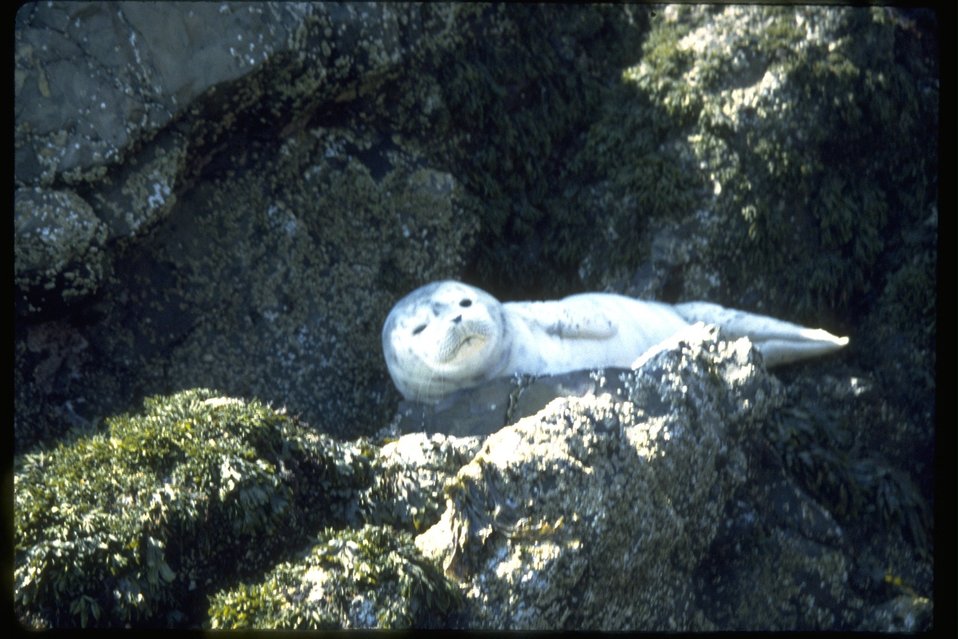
Harbor Seal pup on the South Rocks near Cobble Beach.